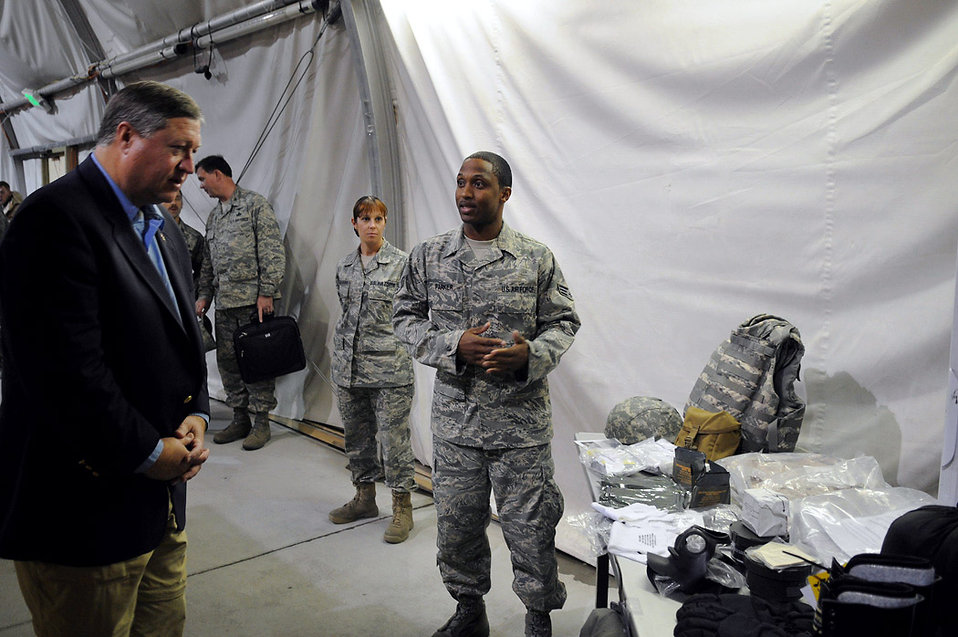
Air Force secretary visits Manas Airmen

Senior Airman Sean Parker briefs Secretary of the Air Force Michael B. Donley about the Expeditionary Theater Distribution Center Oct.15 at Manas Air Base, Kyrgyzstan. Manas AB was the final stop in the secretary's first trip to the U.S. Air Forces Central area of responsibility. Airman Parker is assigned to the 376th Expeditionary Theater Distribution Center.